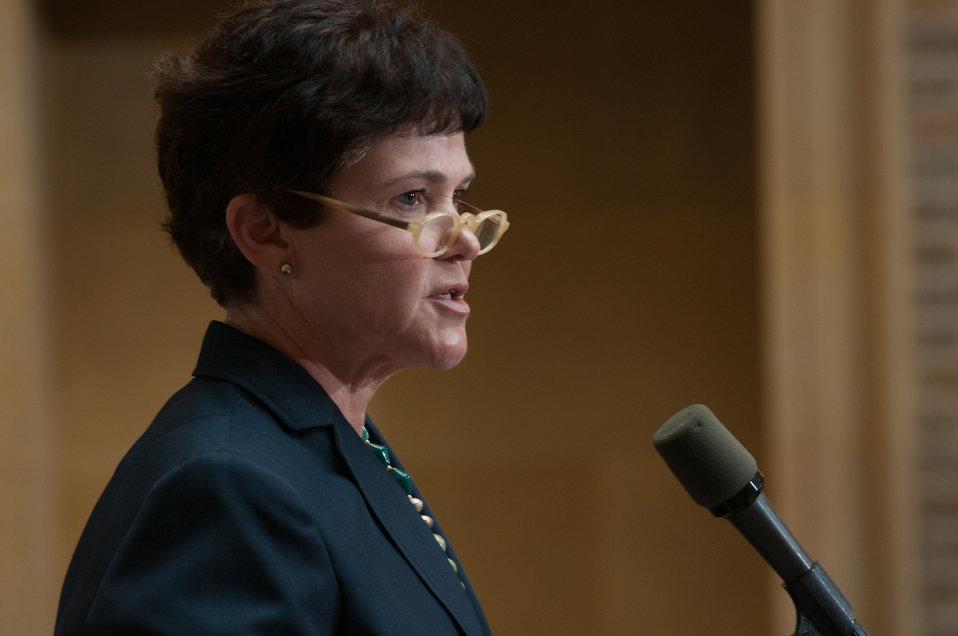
U.S. Department of Agriculture (USDA) Deputy Secretary Krysta Harden talks about the partnership agreement and five new grants for private, state and federal organizations that will work together to stimulate the development of additional wood energy projects in their states, during the Memorandum of Understanding (MOU) announcement and signing at the USDA Headquarters, in Washington, D.C., on Wednesday, September 11, 2013. Collectively, $2.9 million will be spent o this effort -- $1.1 million on federal funds and $1.8 million in non-federal funds.
The partnership agreement focuses on promoting wood energy nationwide as a means to address fire risks, bolster rural economic development, improve air quality, and help meet the Obama Administration’s renewable energy and energy efficiency goals. These organizations support the use of wood energy across the scale of users – from residential users, to commercial and intuitional facilities, to industrial production of heat and or electricity to drive businesses and feed the electrical grid.
Signing the MOU are Biomass Thermal Energy Council, Executive Director Joseph Seymour; Alliance for Green Heat, President John Ackerly, USDA Deputy Agriculture Secretary Krysta Harden; Pellet Fuels Institute Executive, Director Jennifer Hedrick; Biomass Power Association, President and CEO Bob Cleaves. For more information on the cooperative agreement program, visit na.fs.fed.us.werc/wood-energy/ USDA Photo by Lance Cheung.